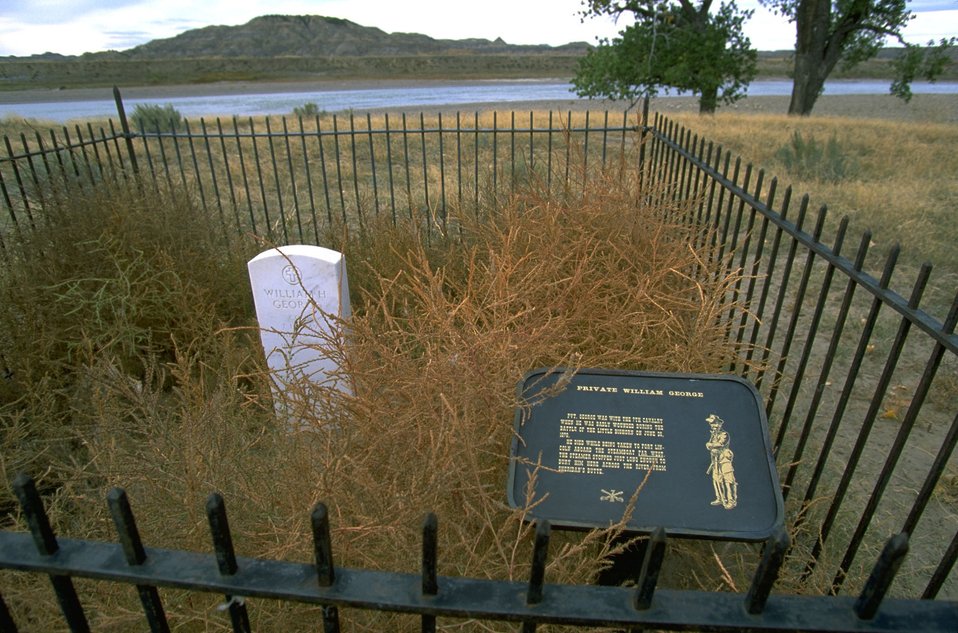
Headstone and plaque of William George of Custer's 7th Cavalry, Powder River Depot